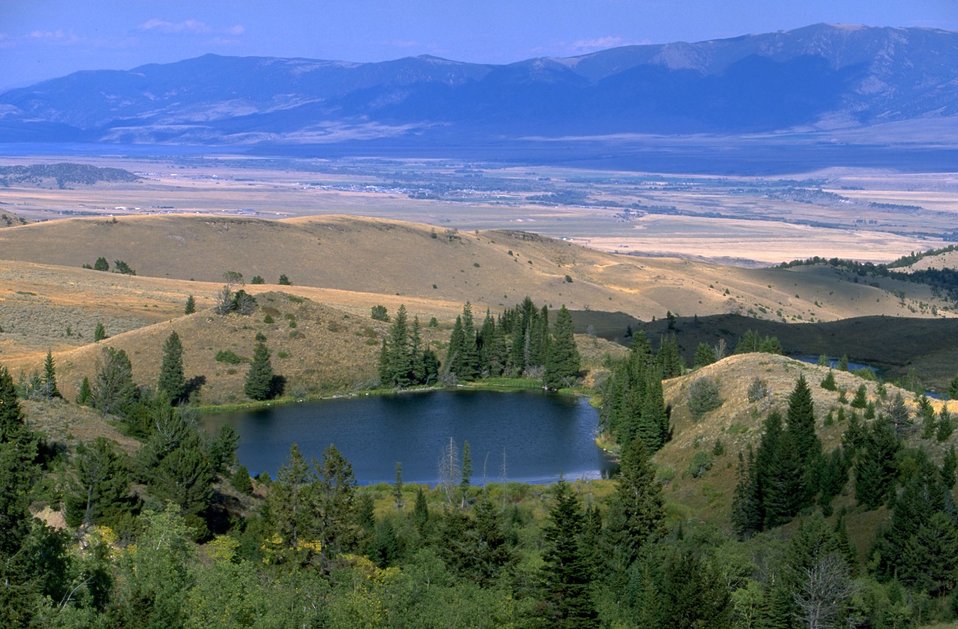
Scenic view of a Lake and Valley